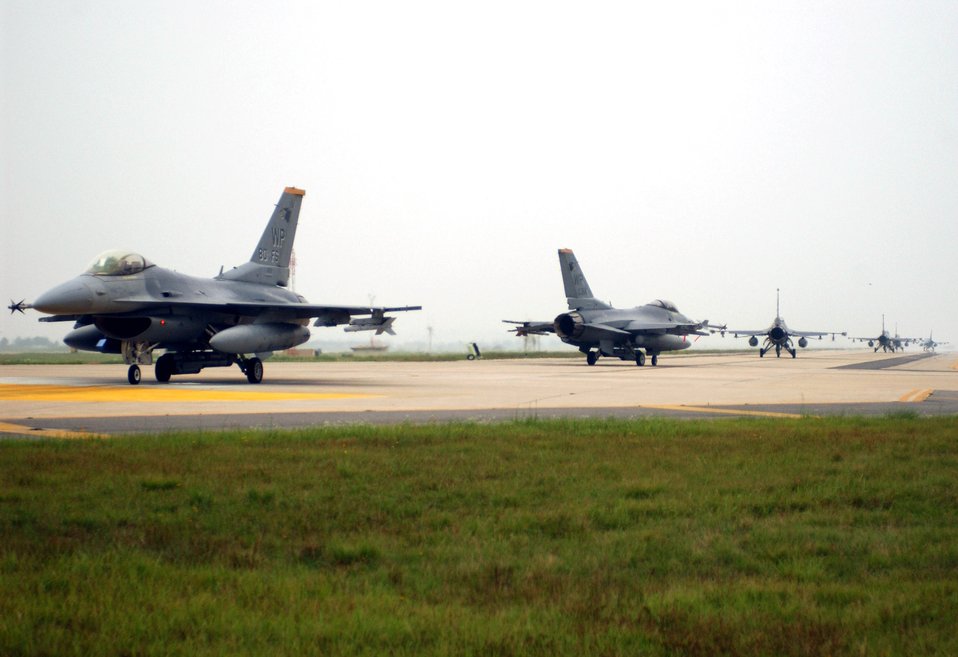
Maintaining credible deterrence

F-16 Fighting Falcons taxi down the runway after returning from a training mission during the Peninsula-Wide Combat Employment Response Exercise July 26 at Kunsan Air Base, South Korea. Members of the 555th Fighter Squadron from Aviano AB, Italy, on their four-month deployment to Kunsan AB teamed up with Airmen of the 8th Fighter Wing. The F-16s are assigned to the 35th, 80th Fighter Squadrons from Kunsan AB, and the 555th FS.